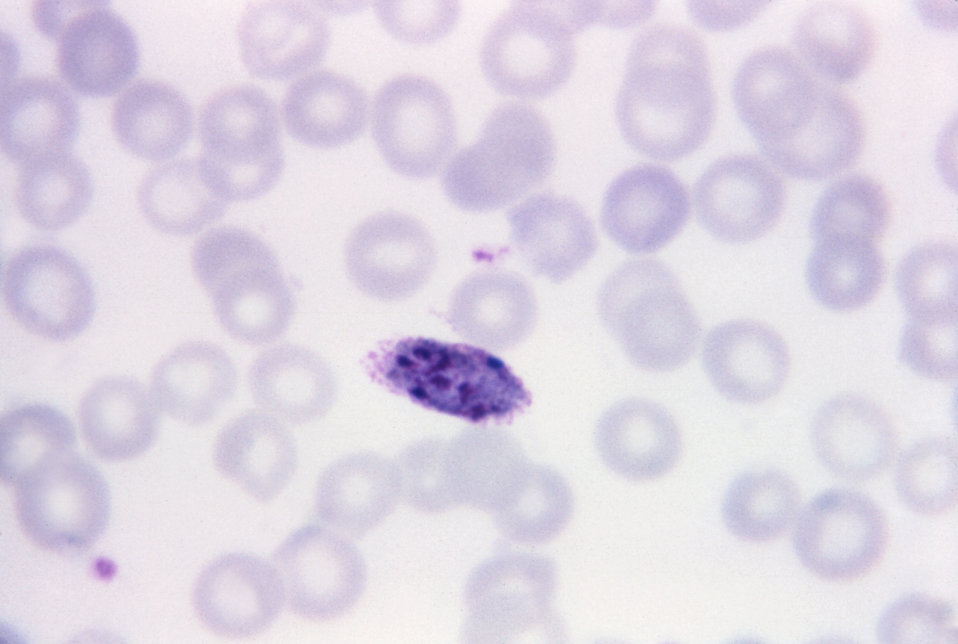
This thin film Giemsa stained micrograph depicts an older, though still immature Plasmodium ovale schizont.